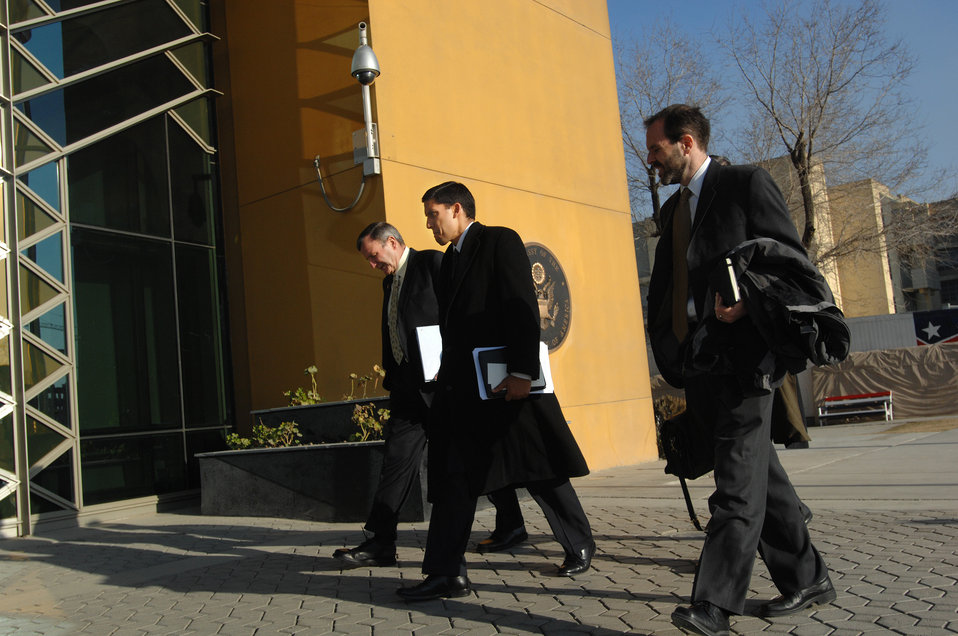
110208sv Shah013

U.S. Ambassador Karl W. Eikenberry and Dr. Rajiv Shah, Administrator of the United States Agency for International Development (USAID), walk to the U.S. Embassy in Kabul, Afghanistan on Tuesday, February 8, 2011. (S.K. Vemmer/Department of State)